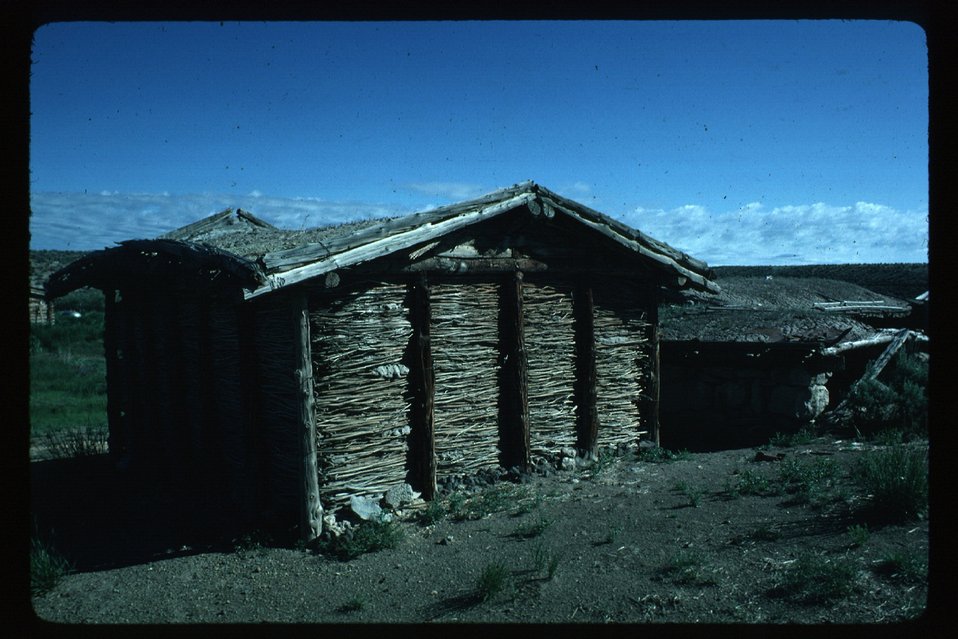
Brace Ranch Archeology LSRD Lower Snake River District